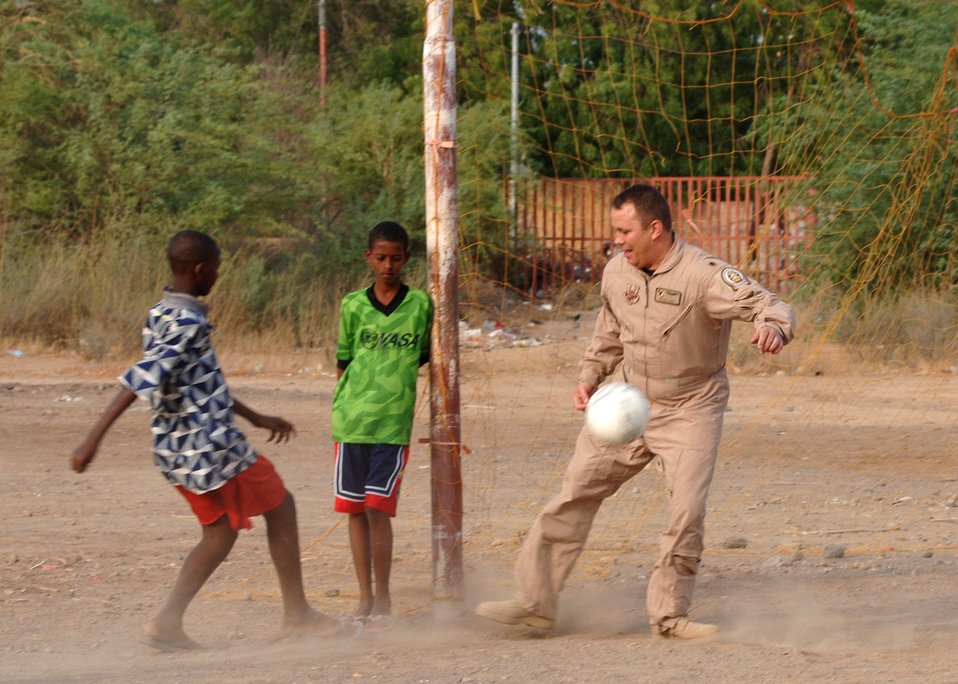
Donation provides fun for Djibouti boy?s orphanage

Maj. Bryan Dunn plays soccer with boys at a local orphanage in Djibouti. More than 80 soccer balls were donated from soccer clubs in Georgia and Colorado and from several colleges across the United States. Major Dunn is assigned to the Combined Joint Task Force-Horn of Africa.